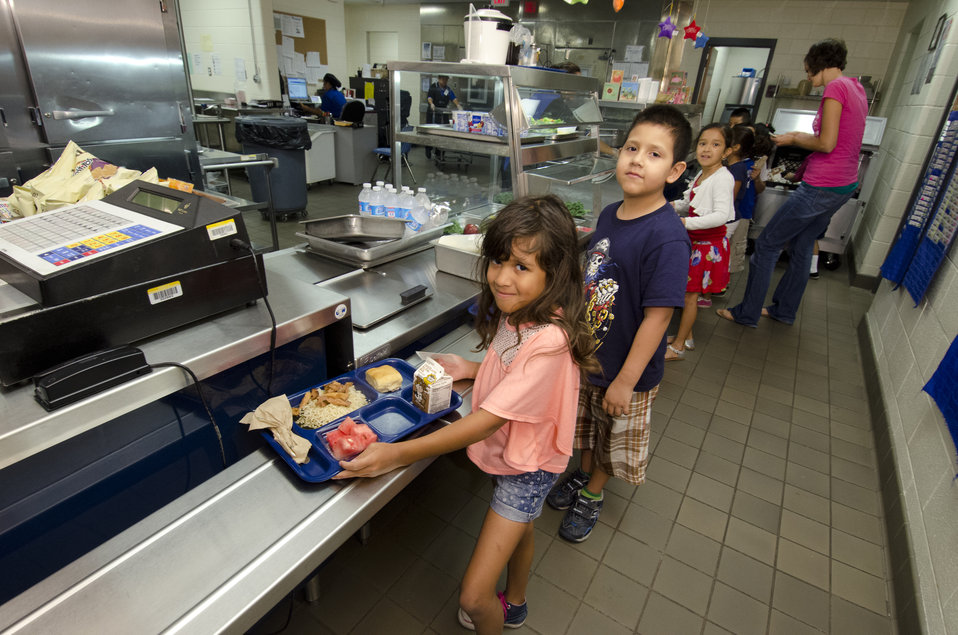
School lunch staff and students enjoy the new school lunch menu created to meet the new standards at the Yorkshire Elementary School in Manassas, VA on Friday, Sept. 7, 2012.